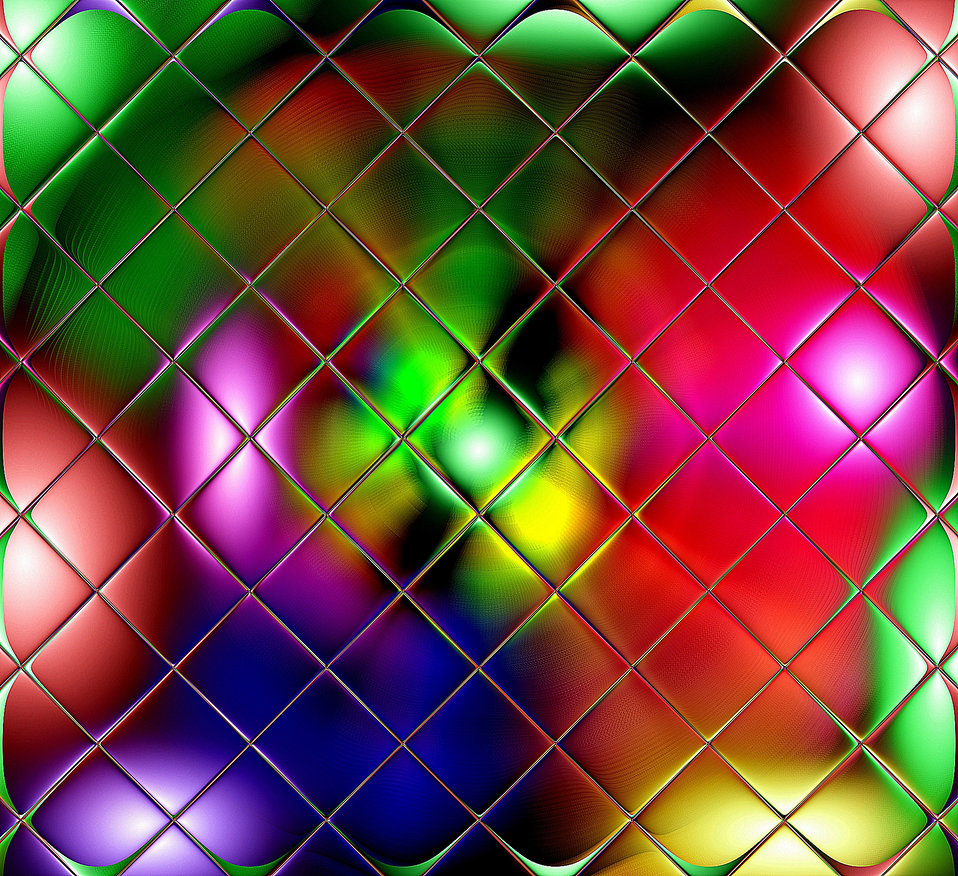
Background 466

Background.